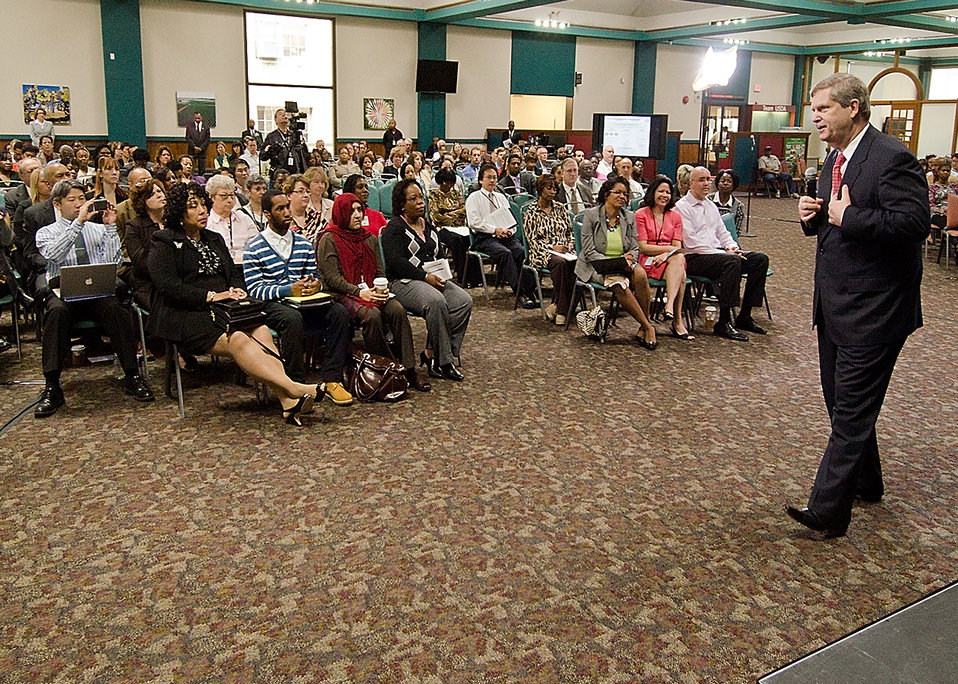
Agriculture Secretary Tom Vilsack offered U. S. Department of Agriculture (USDA) employees the opportunity to ask questions about the Blueprint for Stronger Service Initiative and hear directly from the Secretary Vilsack during the Ask The Secretary event held in the South Building Cafeteria, in Washington, D.C., on Wednesday, March 21, 2012, The Blueprint for Stronger Service Initiative aims to build a modern and efficient service organization that is closely timed with technological innovations - and better suited to respond to 21st century agricultural challenges.